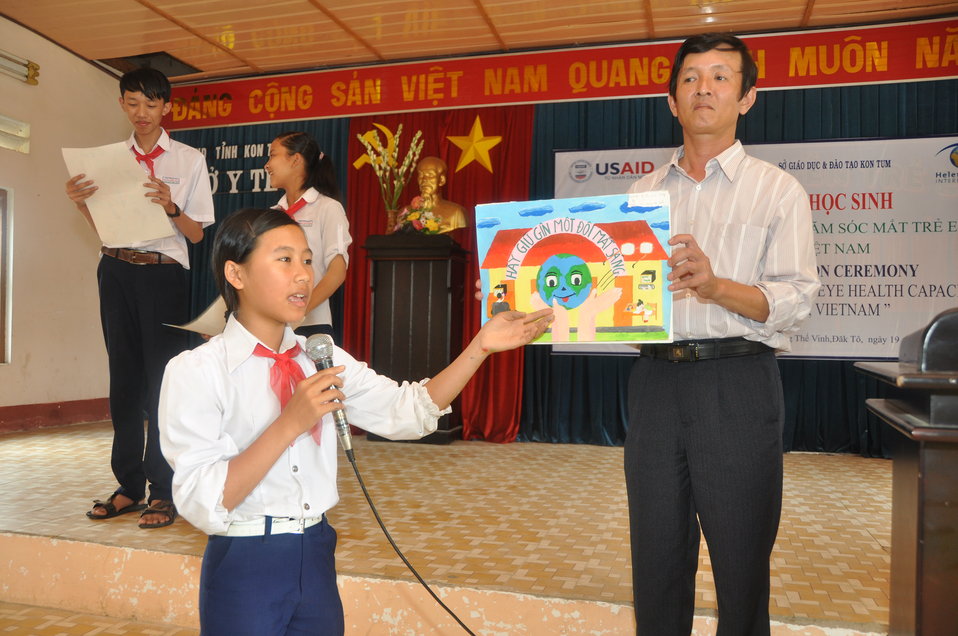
Students in Kon Tum create artwork about the importance of eye care